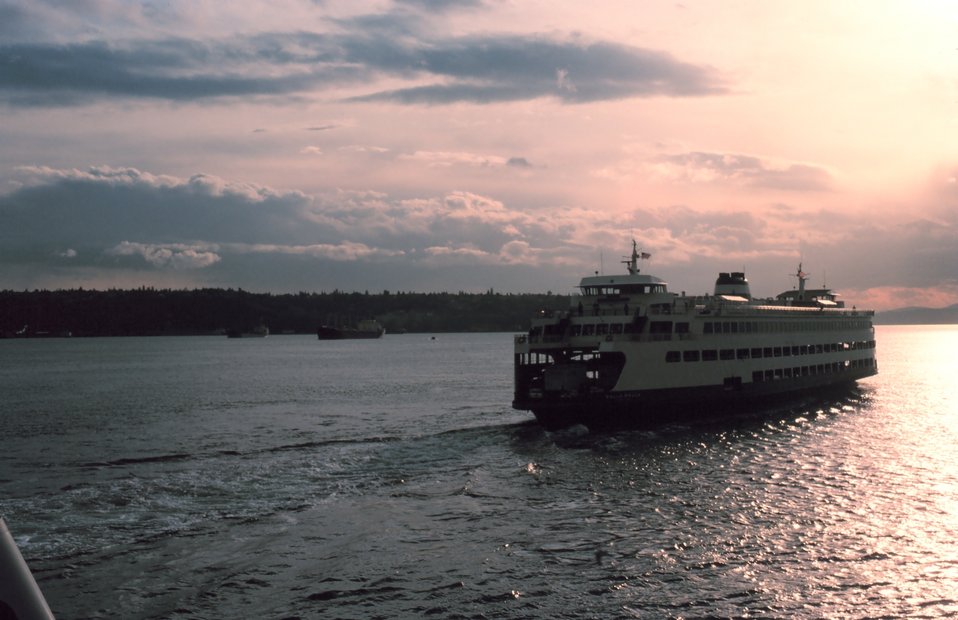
A ferryboat plying Puget Sound in the late afternoon.